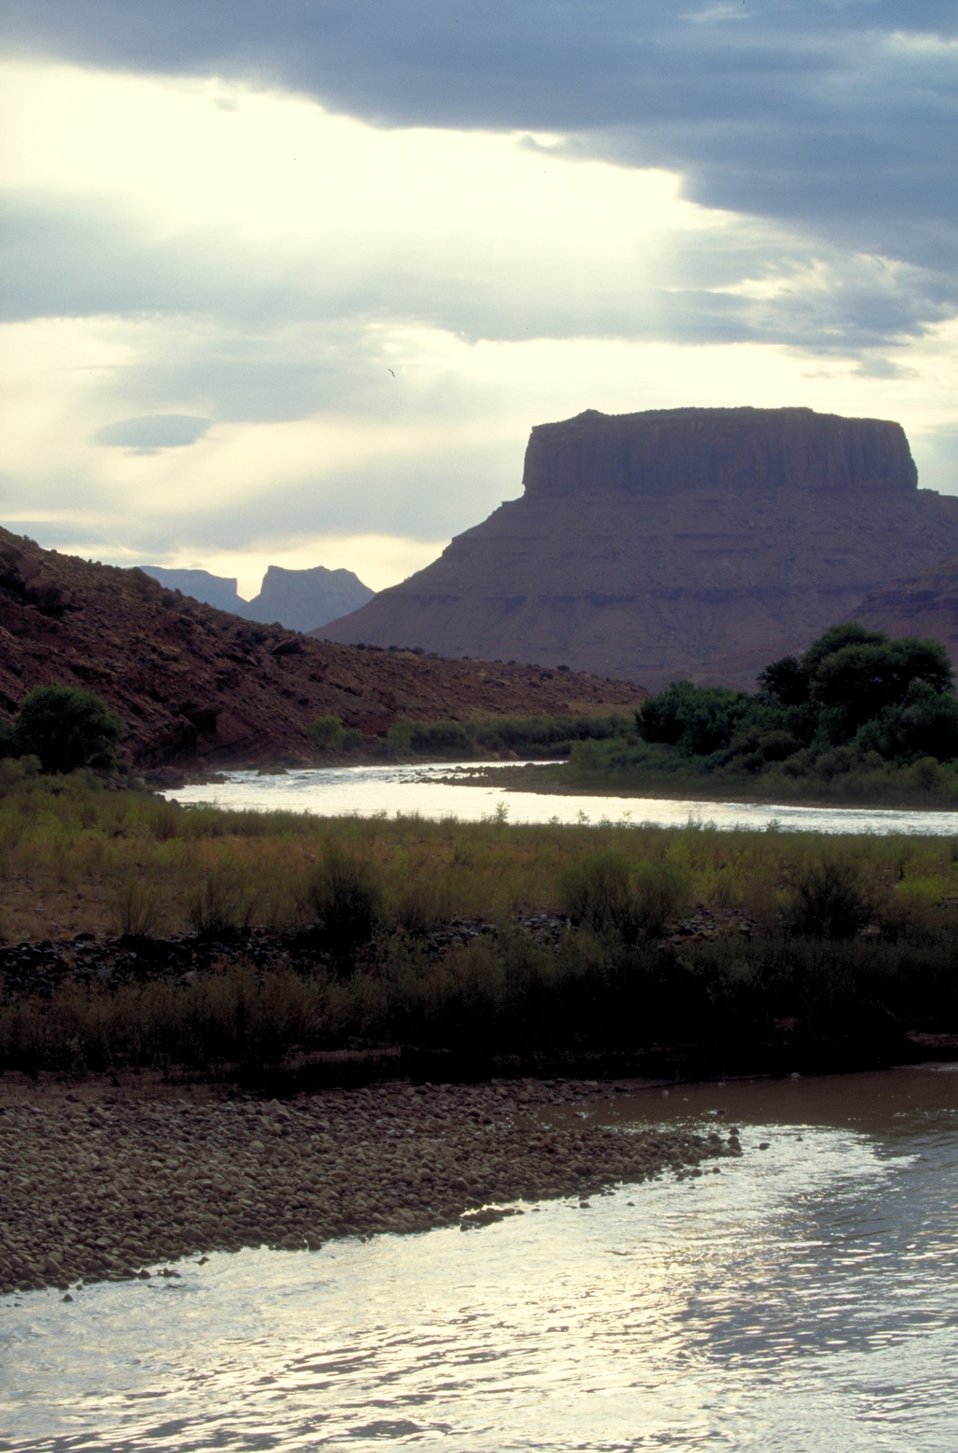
Colorado River near Moab, Utah.